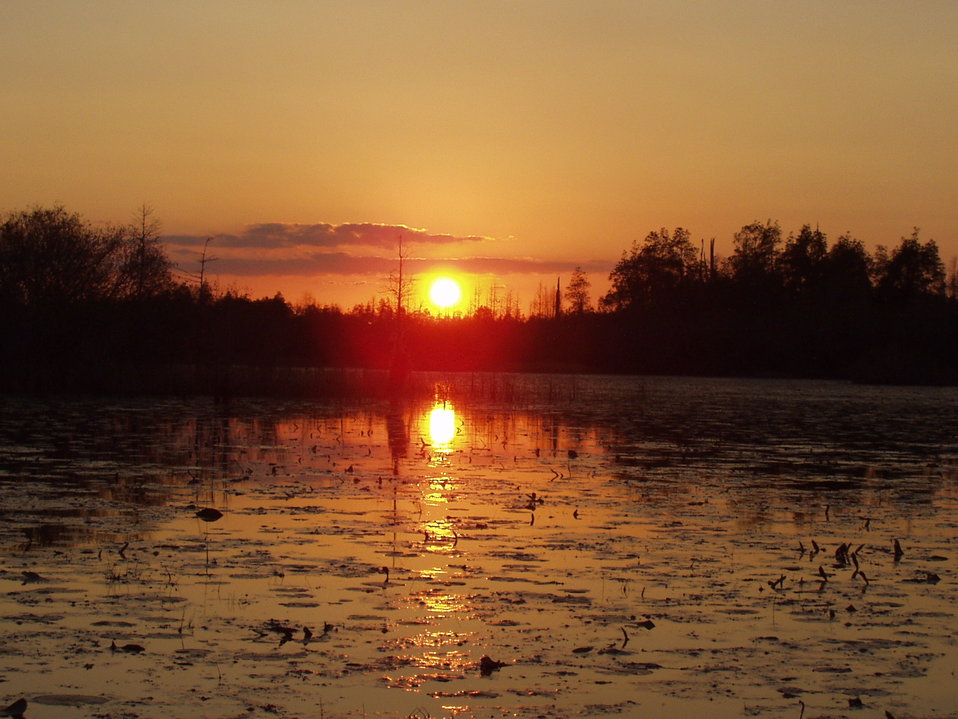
Okefenokee Sunset3

Chesser Prairie. Okefenokee National Wildlife Refuge.